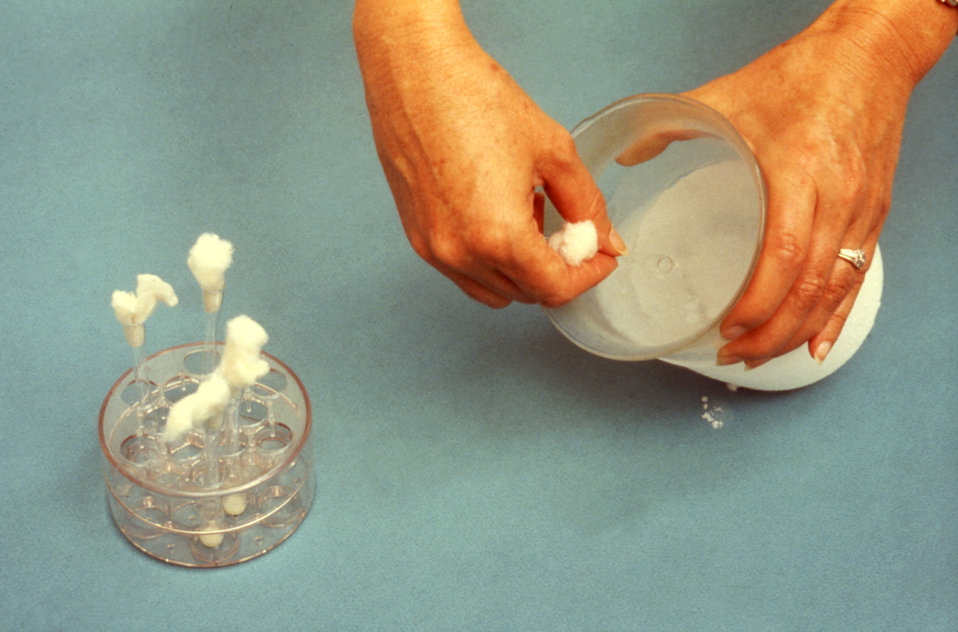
This photograph depicts a few laboratory products involved in storing and shipping anaerobic bacterial specimens.